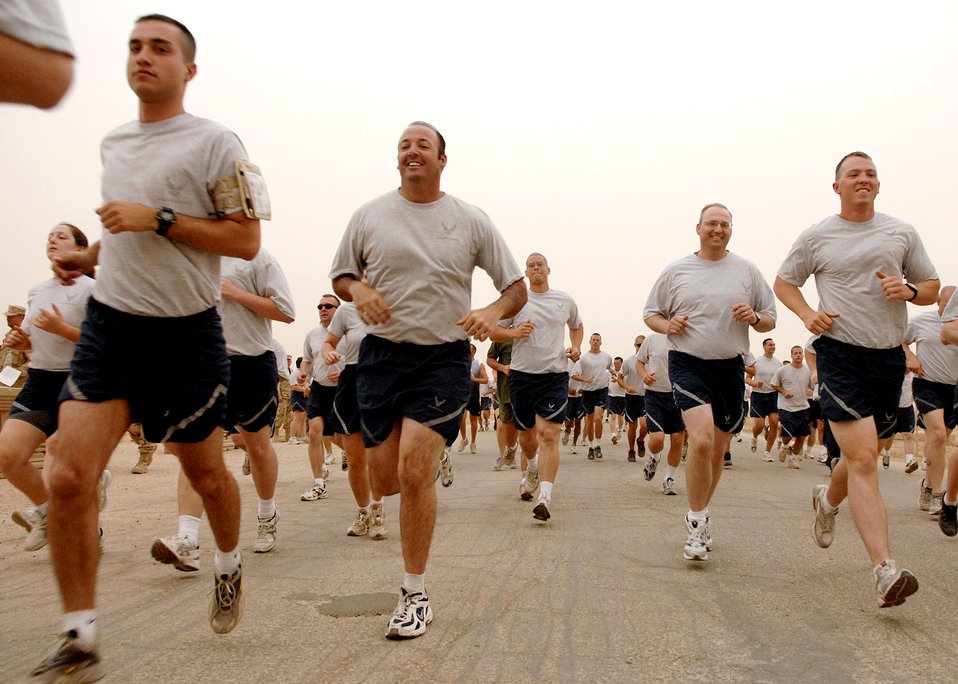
Running and remembering

Members of the 407th Air Expeditionary Group start a 5K run, which is the kickoff to a full day of events celebrating Memorial Day May 28 at Ali Air Base, Iraq. Memorial Day, originally named Decoration Day, was instituted May 5, 1866, in Waterloo, N.Y., to honor the fallen Union Soldiers of the Civil War. After World War I it was expanded to include all military members that have given the ultimate sacrifice for their country.